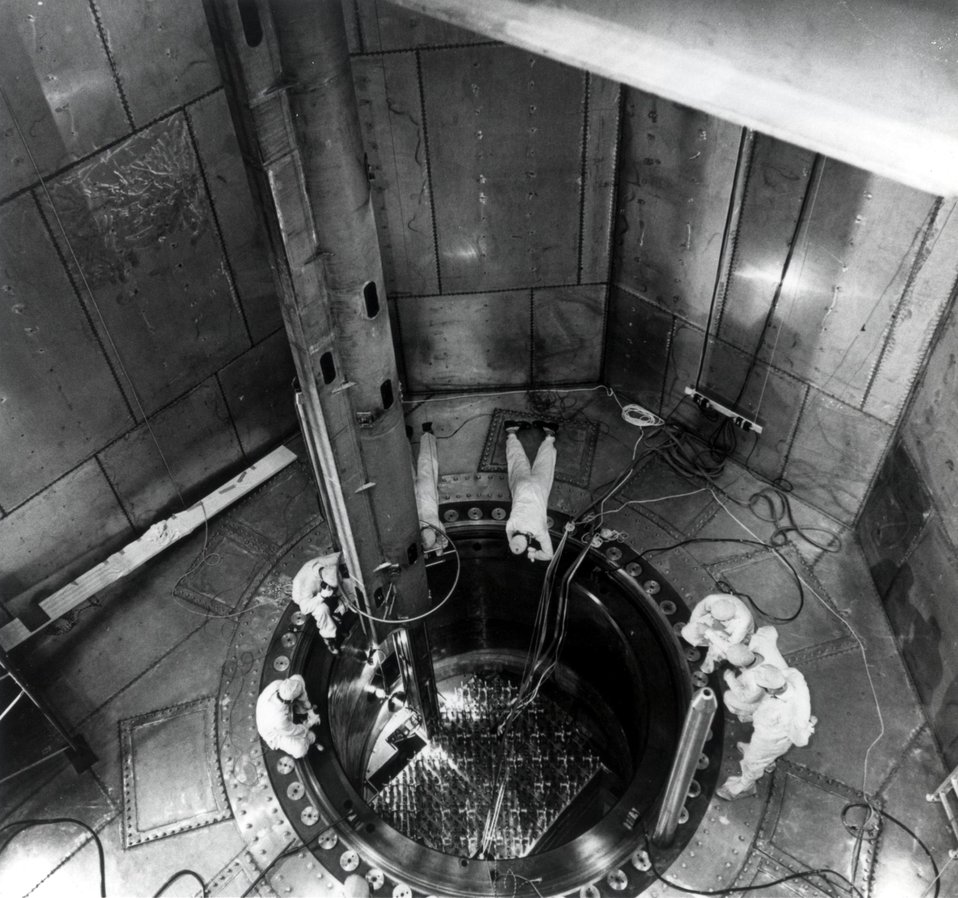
Loading of nuclear fuel in the Fort Calhoun Station's reactor, unit 1, began in May, 1973. Circa 1974.